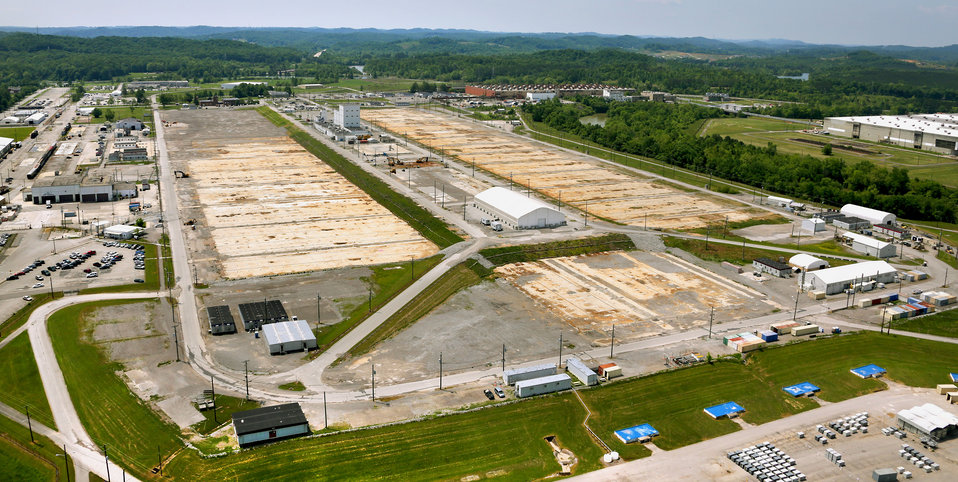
K-25 Foot print aerial 2014 Oak Ridge

JRO 0064 ORNL photo Jason Richards 5-20-2014 K-25 footprint Oak Ride Tennessee